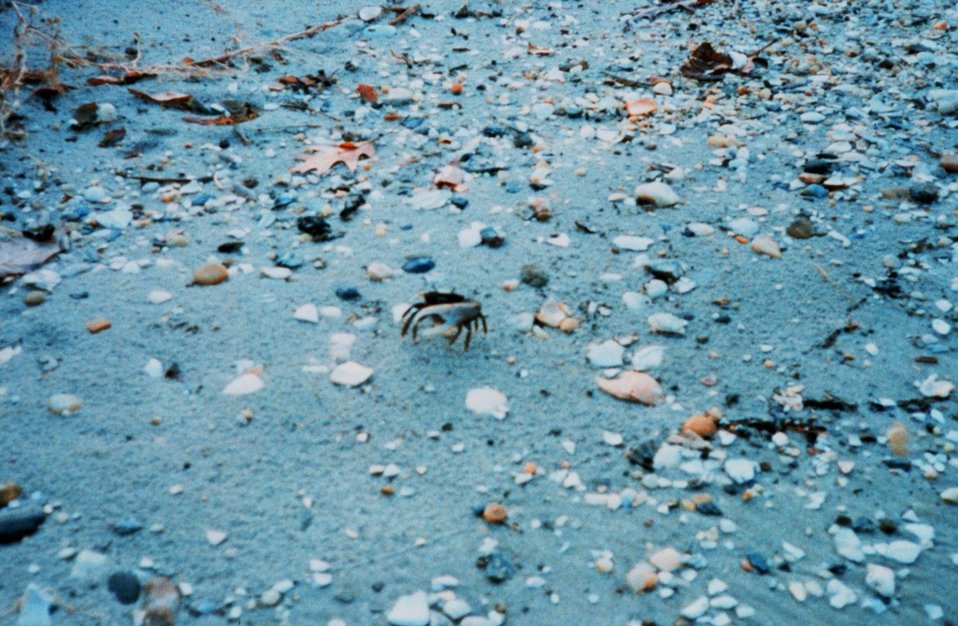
Fiddler crab on the beach